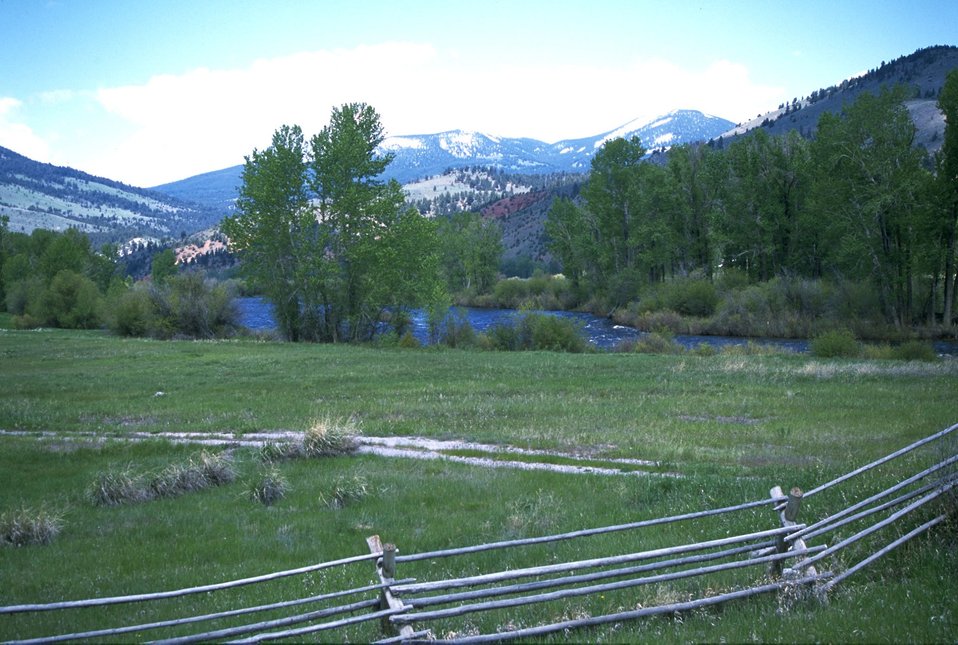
Grass around the Jerry Creek Day Use Area with the Big Hole River in the background